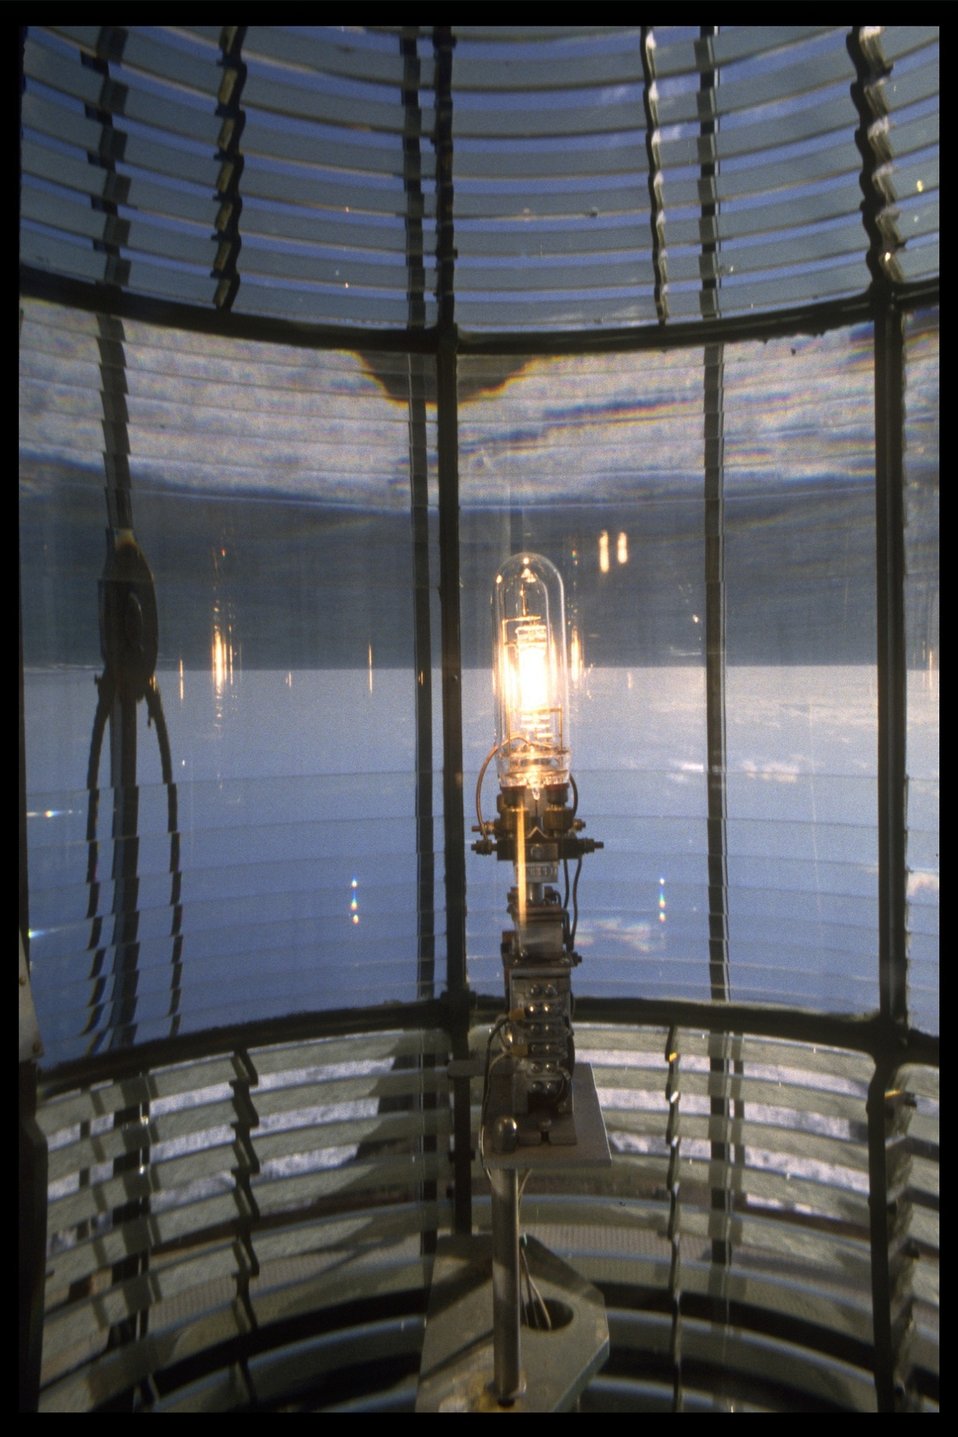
The lightbulb (1000 watt lens) on the interior of the Yaquina Head lighthouse.